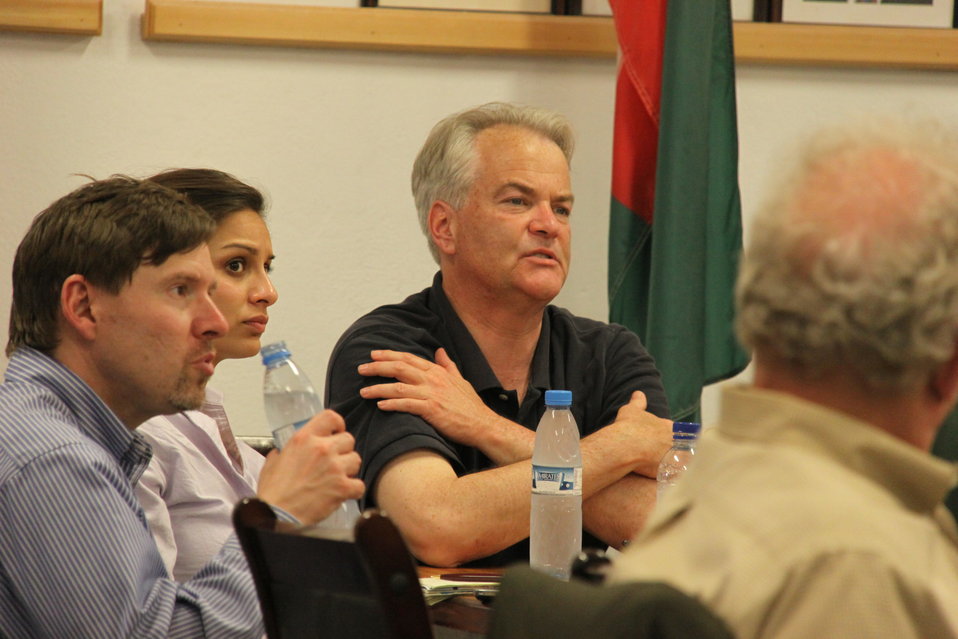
Meeting with Local Leaders in Kandahar